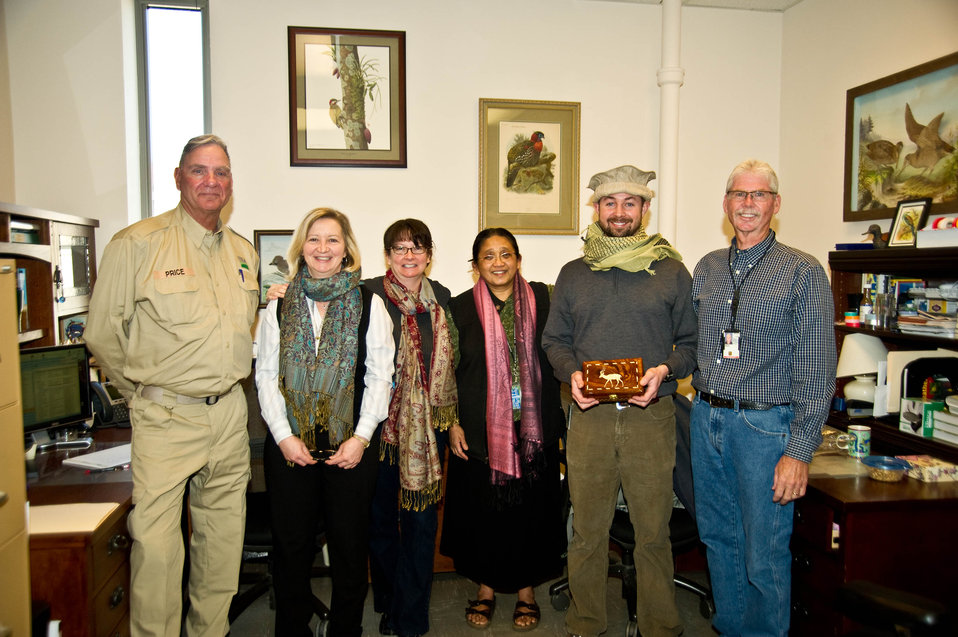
(L to R) U.S. Department of Agriculture (USDA) Animal Plant Health Inspection Service (APHIS) Wildlife Biologist Keel Price, Smithsonian Institution National Museum of Natural History Research Scientist and Manger in the Feather Identification Lab Dr. Carla Dove, Smithsonian Institution National Museum of Natural History Feather Identification Lab Research Scientists Marcy Heacker, Faridah Dahlan and Jim Whatton, USDA APHIS Wildlife Biologist George Graves pose for a group photograph at the Smithsonian on Tuesday, Mar. 19, 2013.